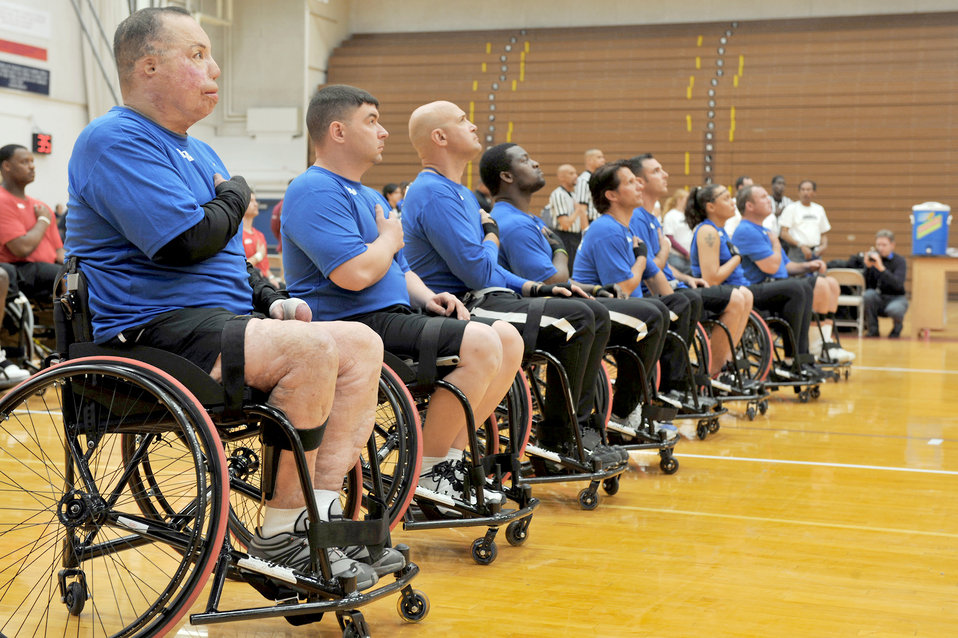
Warrior Games basketball competition

Team Air Force pays respect during the national anthem before playing a game of wheelchair basketball against the Marines May 11, 2010, during the Warrior Games competition held at the Olympic Training Center in Colorado Springs, Colo.